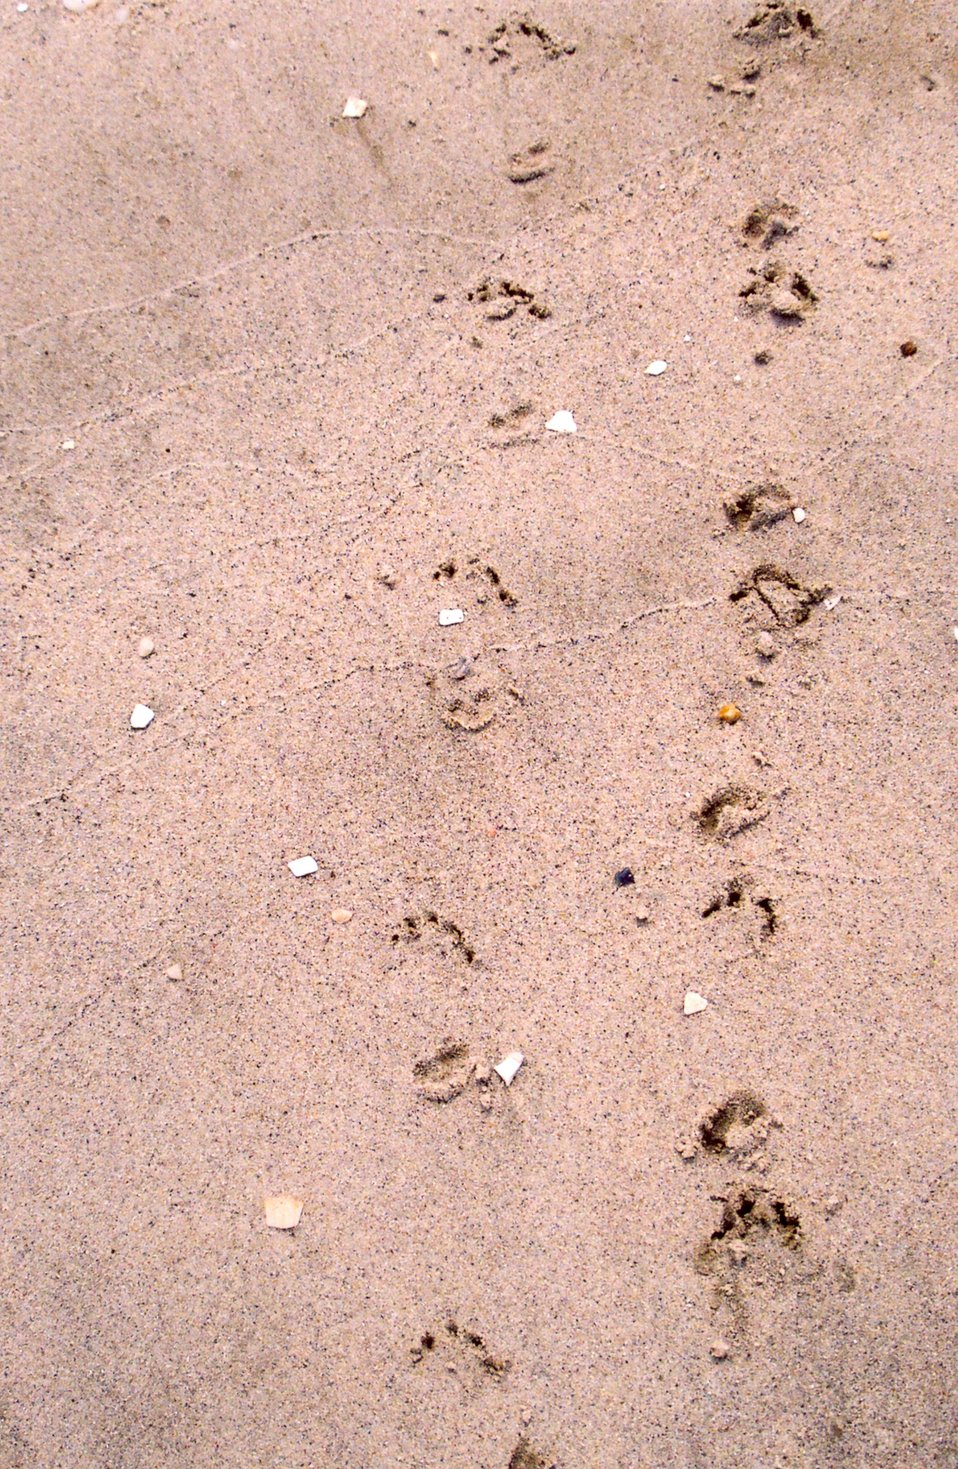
Terrapin tracks in wet sand